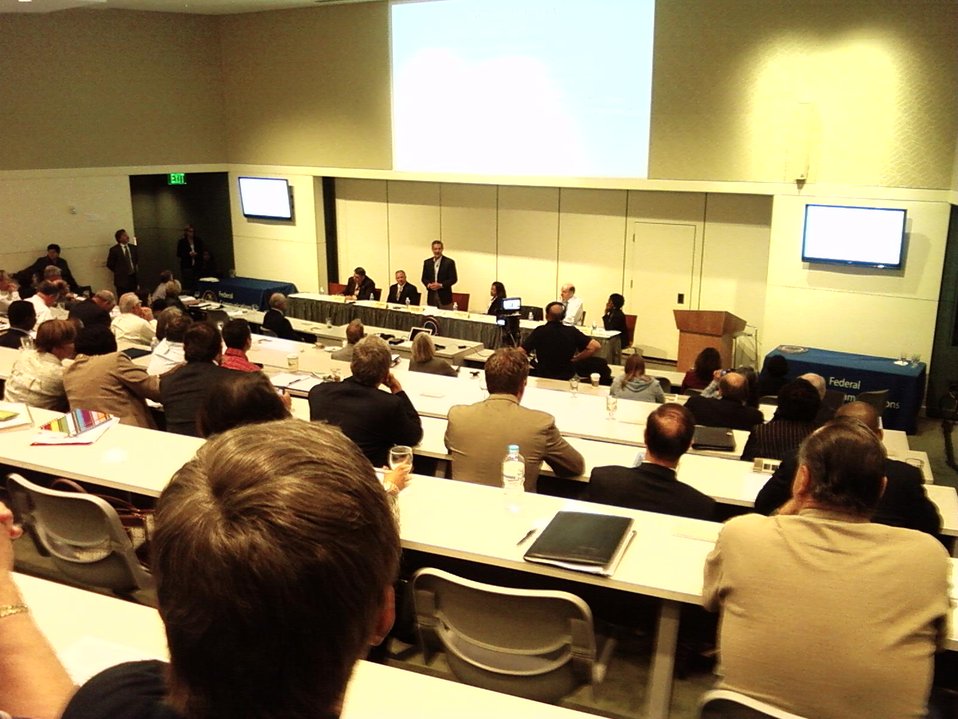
Field Hearing on Broadband Adoption 10-6-09